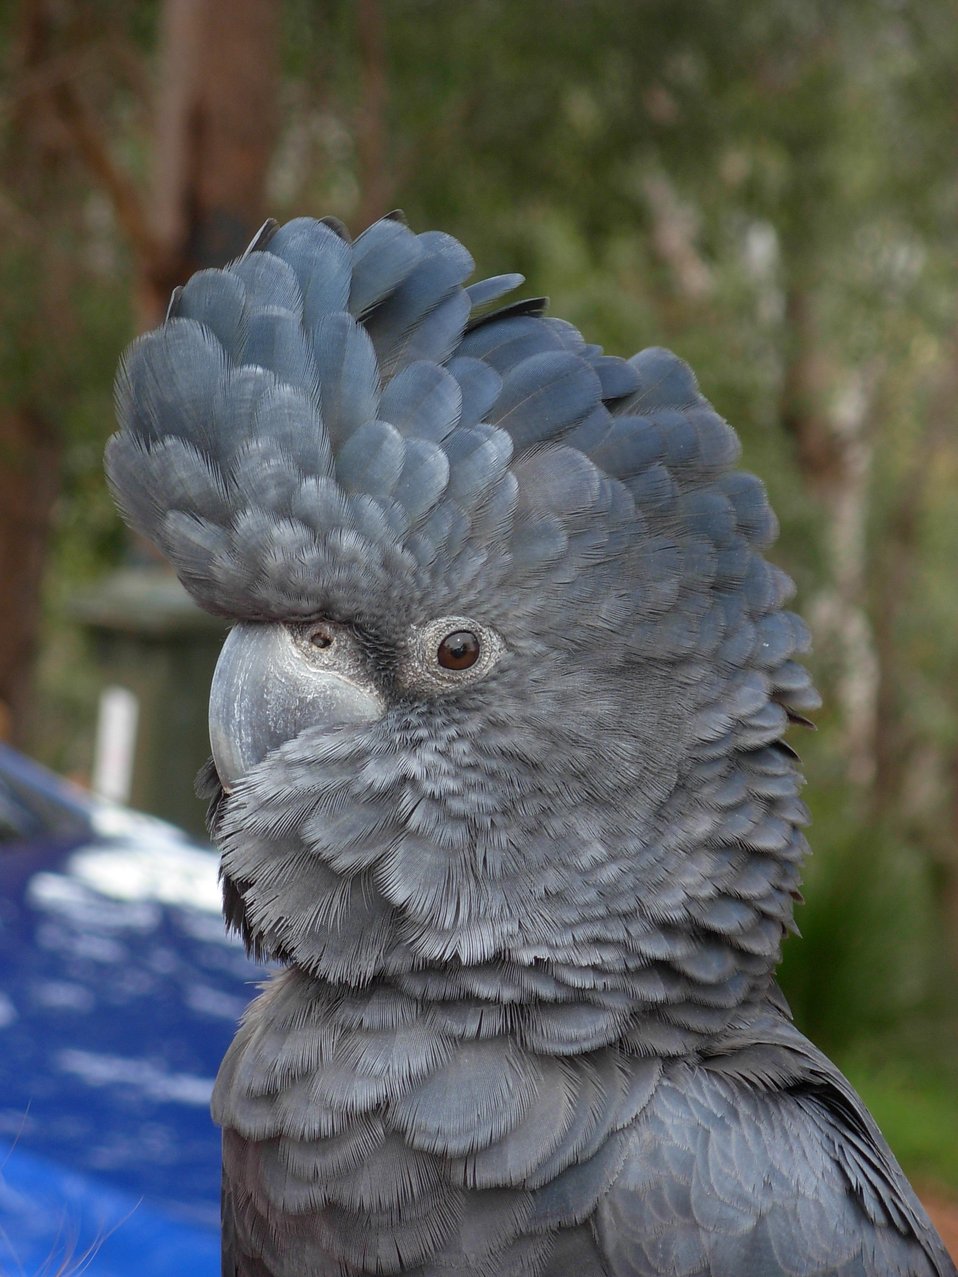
Red-tailed Black Cockatoo (Calyptorhynchus banksii) also known as Banksian- or Bank's Black Cockatoo. A tame parrot (ie hand reared and not from the wild) from the Karakamia wildlife sanctuary in Gooseberry Hill, Western Australia while on a Sunday walk with handler.